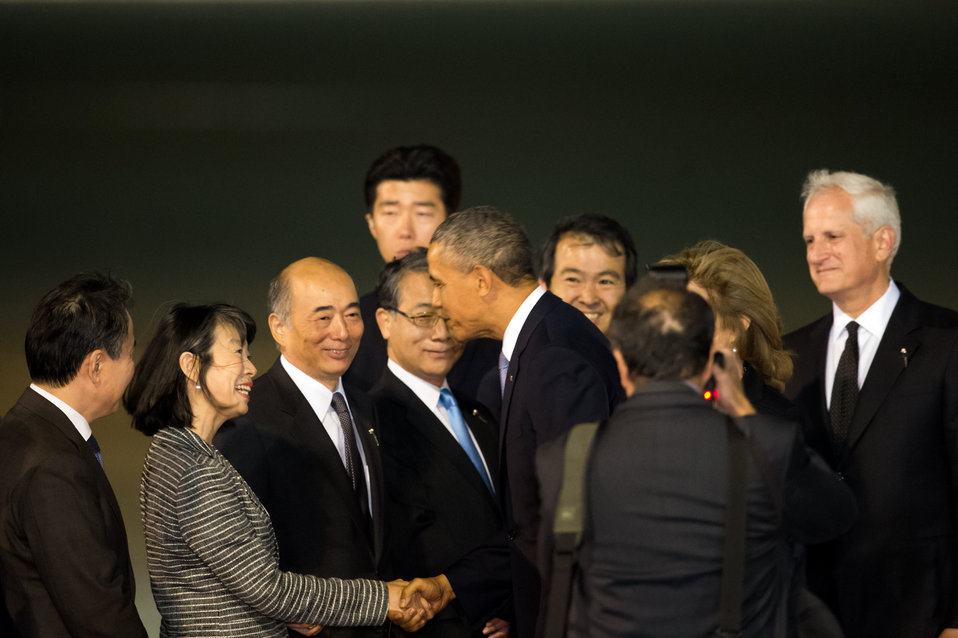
President Obama is Greeted by Japanese Officials Upon Arrival in Tokyo

U.S. President Barack Obama arrives at Tokyo International Airport and is welcomed by Japanese Ambassador to the United States Kenichiro Sasae and other Japanese officials on April 23, 2014.